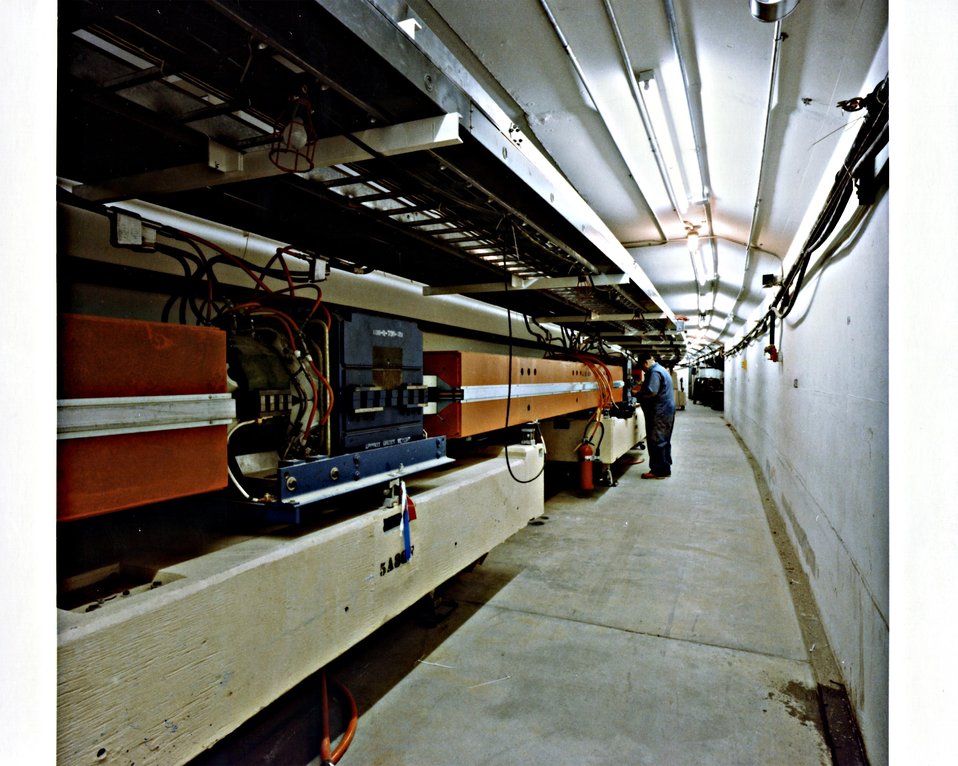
WORKER IN THE PEP STORAGE RING TUNNEL.

THE PEP STORAGE RING IS ONE OF TWO OPERATIONAL ELECTRON POSITRON STORAGE RINGS LOCATED AT THE SLAC. BEAMS OF ELECTRONS AND POSITRONS CIRCULATE WITHIN THE RING IN OPPOSITE DIRECTIONS AND COLLIDE AT SEVERAL POINTS, CREATING VARIOUS SUBATOMIC PARTICLES IN THE PROCESS. RESEARCHERS STUDY THE BEHAVIOR OF THESE NEW PARTICLES, GAINING INSIGHT INTO THE NATURE AND STRUCTURE OF THE SUBATOMIC WORLD AND THE FORCES THAT OPERATE THEREIN. THE ELECTRON AND POSITRON BEAMS OF THE PEP STORAGE RING CIRCULATE IN A VACUUM PIPE INSIDE A SERIES OF MAGNETS. THE LONG RECTANGULAR BLOCKS ARE BENDING MAGNETS, WHICH DEFLECT THE BEAM INTO A CIRCULAR PATH. THE SMALLER BLOCKS ARE FOCUSING MAGNETS, WHICH KEEP THE BILLIONS OF PARTICLES IN THE BEAM BUNCHES TIGHTLY TOGETHER. PEP IS APPROXIMATELY ONE AND ONE HALF MILES IN CIRCUMFERENCE AND CAN ACCOMMODATE PARTICLE BEAMS OF UP TO 18 BILLION ELECTRON VOLTS (GEV).